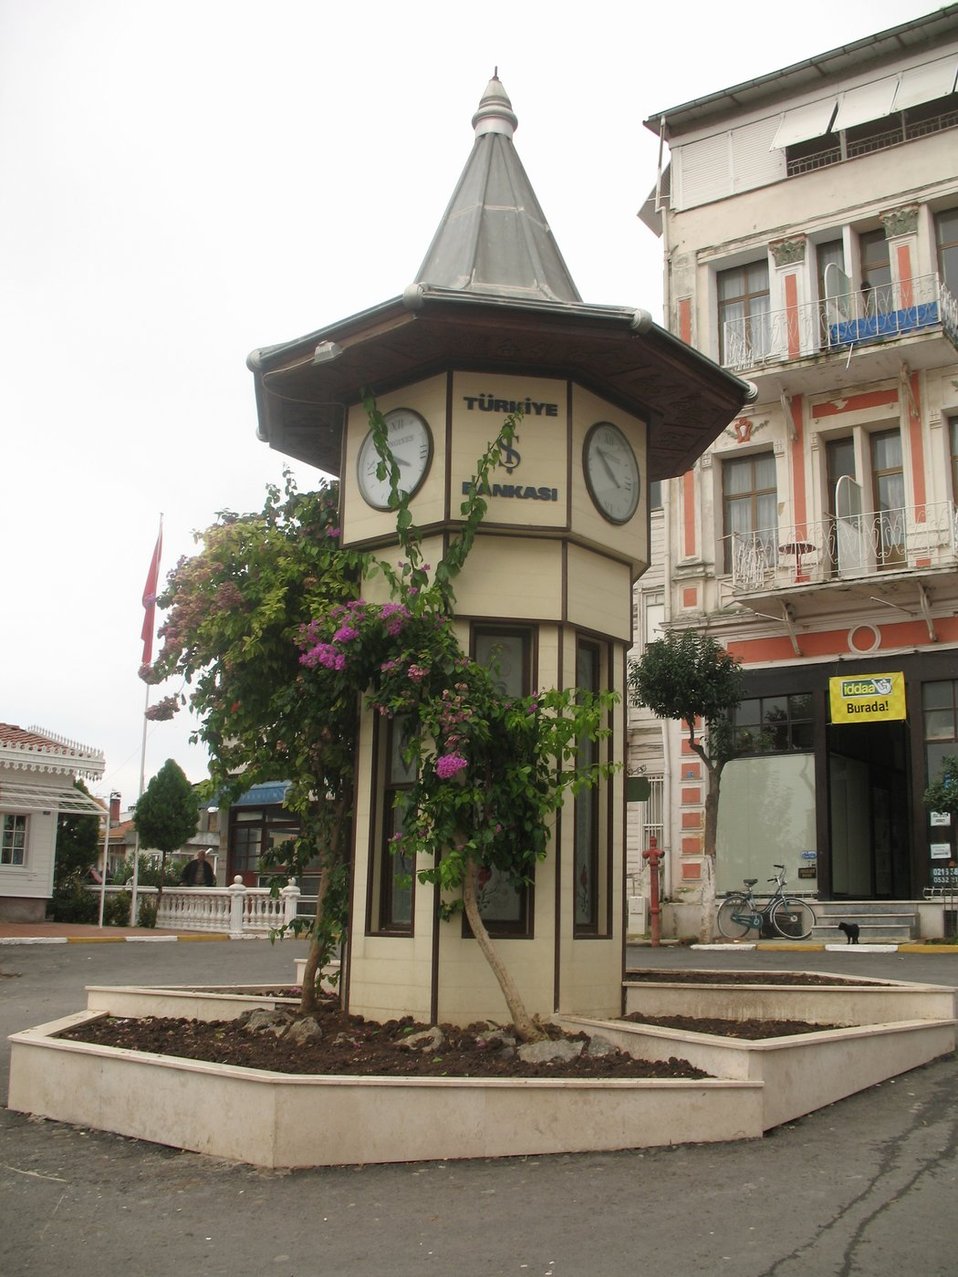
Princes' Islands,Prinkipo or Büyükada or Adalar